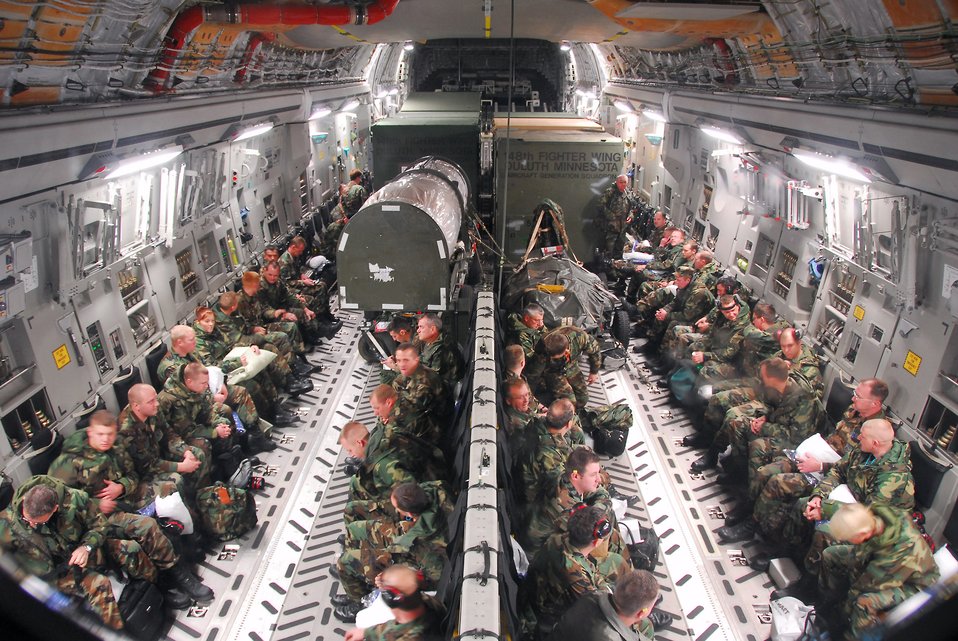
Air National Guard unit earns 'Star' rating

Minnesota Air National Guard members of the 148th Fighter Wing await departure in a C-17 Globemaster prior to departing to Hickam Air Force Base, Hawaii, Nov. 9, 2007, at the Air National Guard Base located in Duluth, Minn. The 148th FW was selected by Occupational Health and Safety Administration officials for the Voluntary Protection Program Star Award.